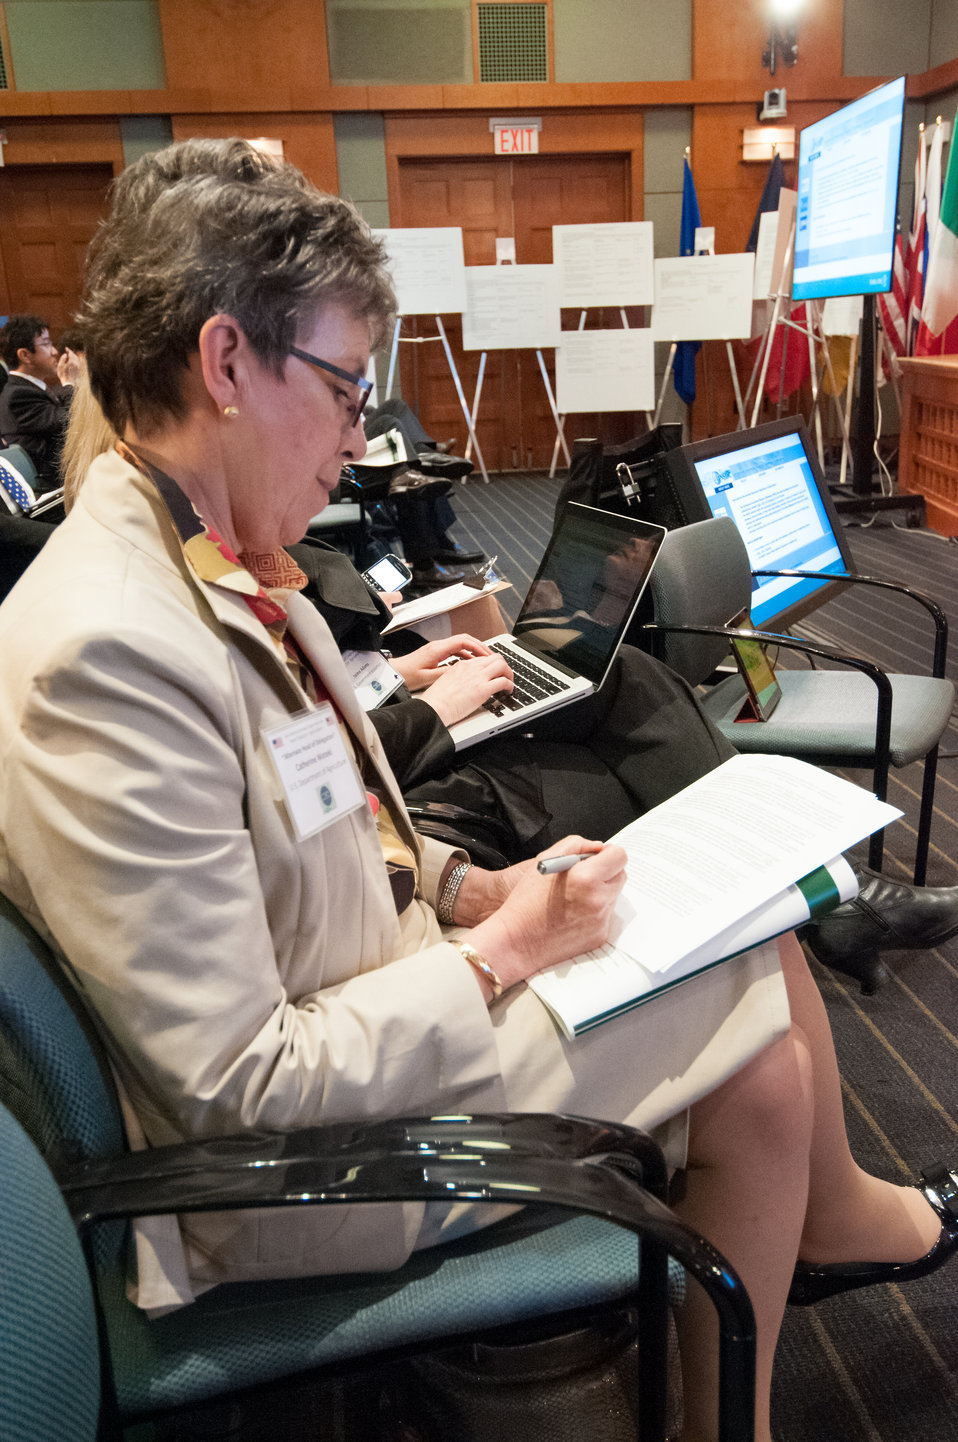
Agriculture Under Secretary Research, Education and Economics (REE) Host and Mistress of Ceremonies Dr. Catherine Woteki takes notes during the second day of the two day G-8 International Conference on Open Data for Agriculture in Washington, D.C. on Tuesday, Apr. 30, 2013. The conference launched a new 'virtual community' of Food, Agriculture, and Rural data on Data.gov-the U.S. Government's data sharing website-to catalogue America's publicly available agricultural data and increase the ability of the public to find, download, and use datasets that are generated and held by the Federal Government. The data community features a collection of more than 300 newly cataloged datasets, databases, and raw data sources related to food, agriculture, and rural issues from agencies across the U.S. Government. In addition to the data catalog, the virtual community shares a number of applications, maps and tools designed to help farmers, scientists and policymakers improve global food security and nutrition.